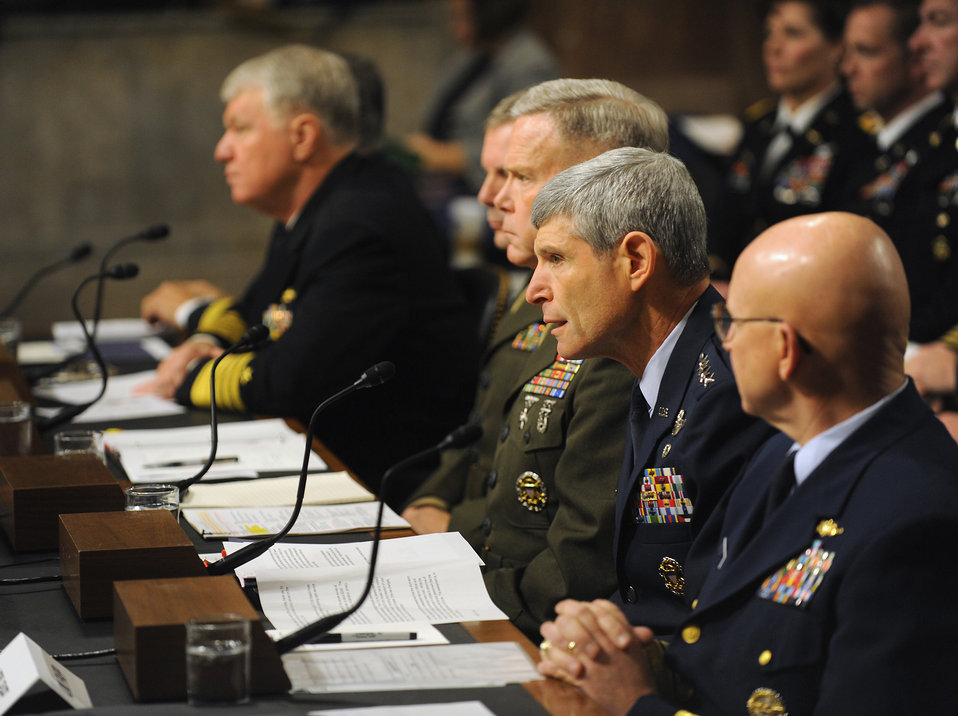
HASC Hearing on Don't Ask, Don't Tell

Air Force Chief of Staff Gen. Norton Schwartz testifies before the Senate Armed Services Committee Dec. 3, 2010, in Washington, D.C. General Schwartz, his fellow service chiefs and the vice chairman of the Joint Chiefs of Staff testified on the recently released Comprehensive Review Working Group report, which addresses the potential repeal of the